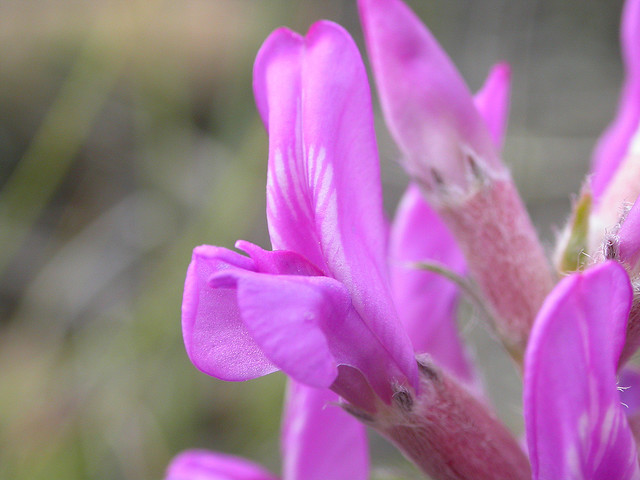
locoweed

Charles M. Russell National Wildlife Refuge